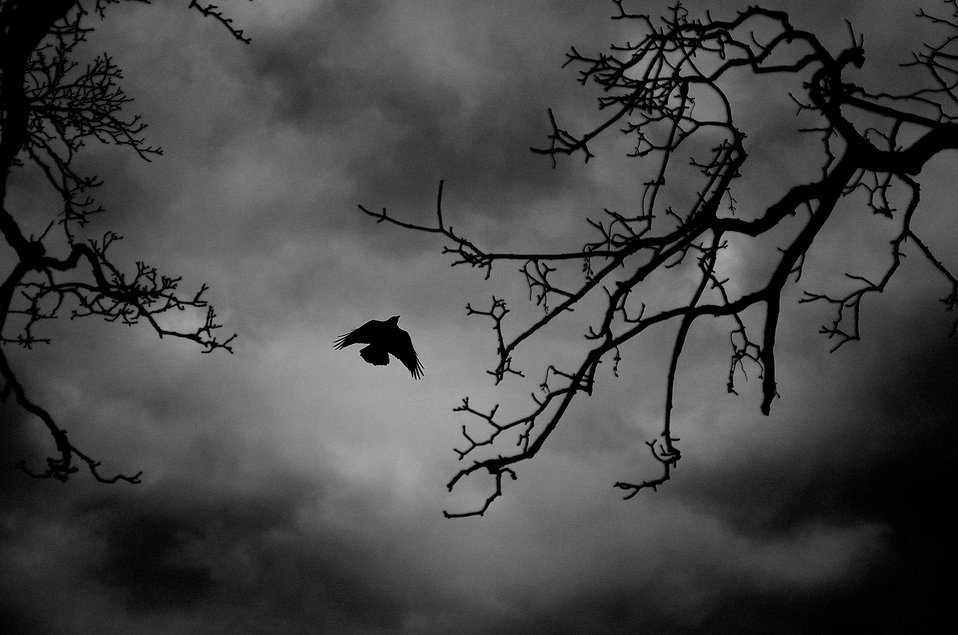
Flying bird in the branches.